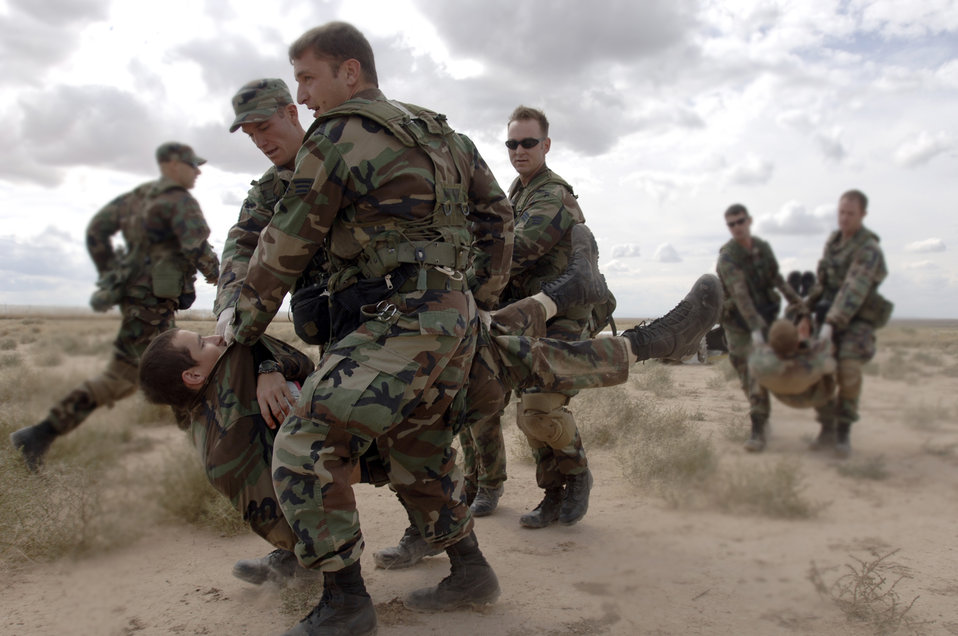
Seasoned PJ trains next generation

Airmen practice transporting